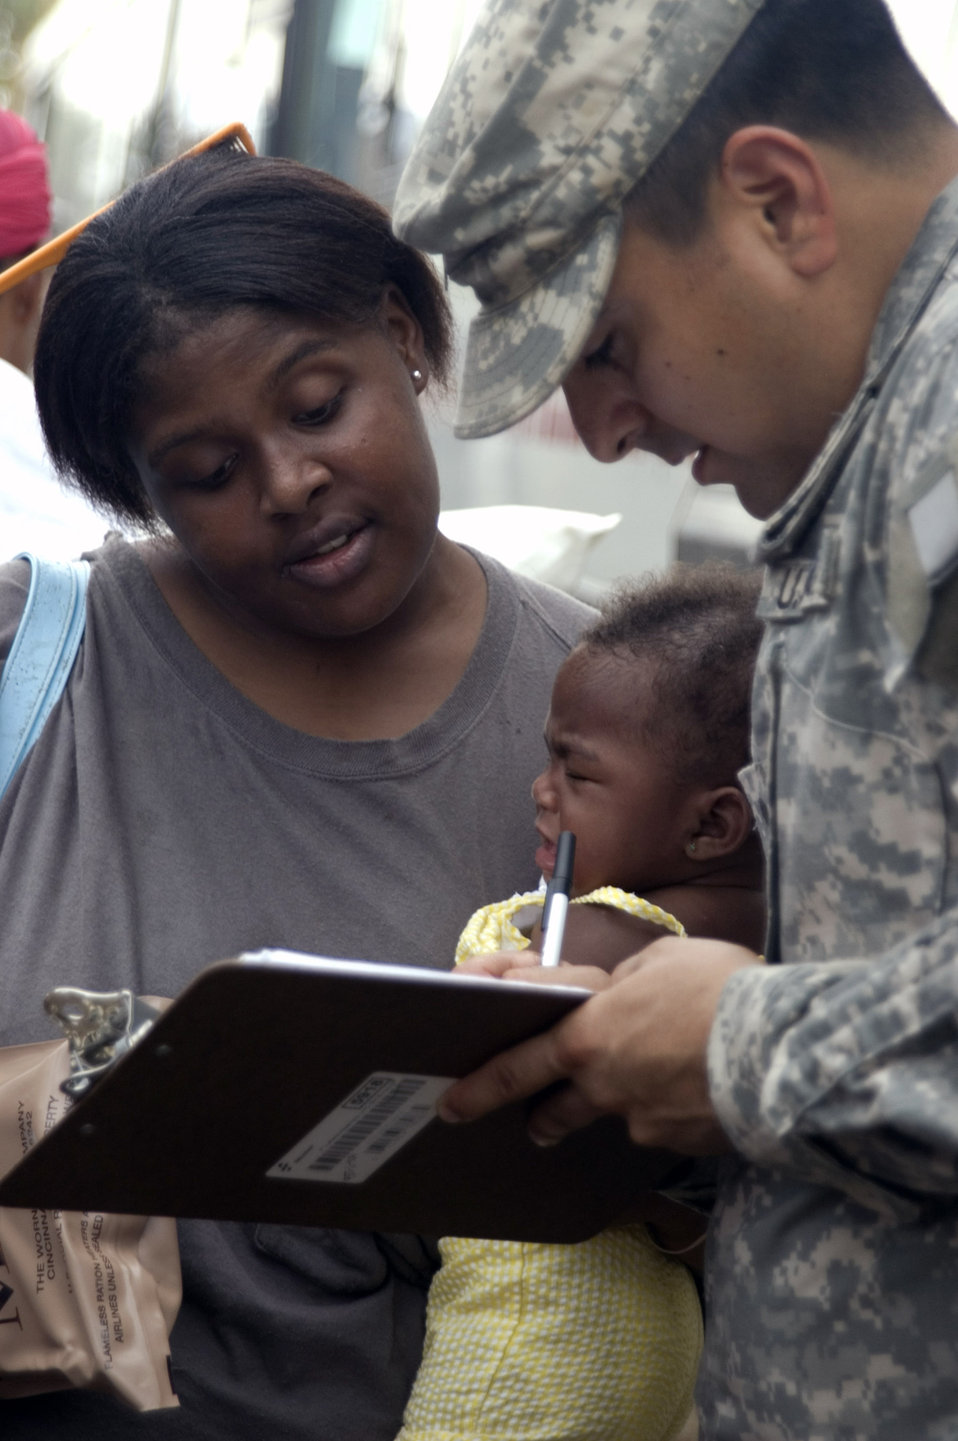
Airmen, soldiers aid people affected by Hurricane Ike

Army Spc. Jacob Mireles asks an evacuee for identification information before she boarded a bus to San Antonio Sept. 14. Approximately 1,000 people boarded buses after Galveston, Texas, received heavy flooding, power and water outage due to Hurricane Ike. Specialist Mireles is from the 162th Area Support Medical Company, Texas Army National Guard.